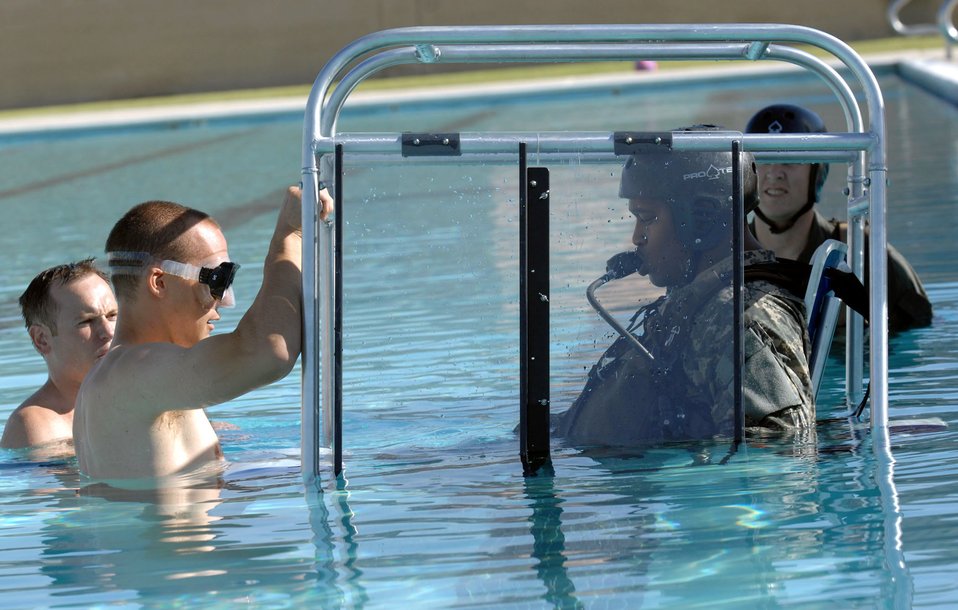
Practicing to be safe in the water

Staff Sgt. Chris Jones (in goggles) and Staff Sgt. Michael Nettleingham instruct Army Staff Sgt. Joe Mangram on helicopter escape procedures in the event of a water landing. The sergeants are survival, evasion, resistance and escape, or SERE, instructors at Nellis Air Force Base, Nev. Sergeant Mangram, a Nevada Army National Guardsman, was taking his annual water survival training.